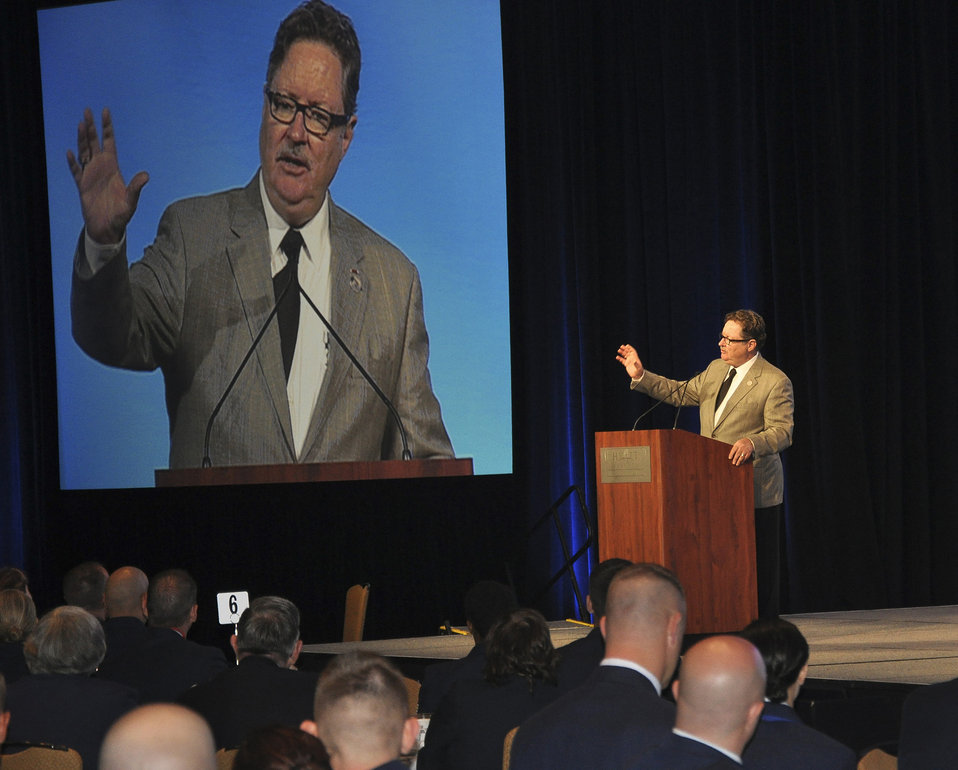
AFSA Convention

Retired Col. John Bowley gives an account of his career at the 2012 Professional Airmen's Conference welcome breakfast in Jacksonville, Fla., Aug. 12, 2012. Bowley is the former commander of the College of Enlisted Professional Military Education.